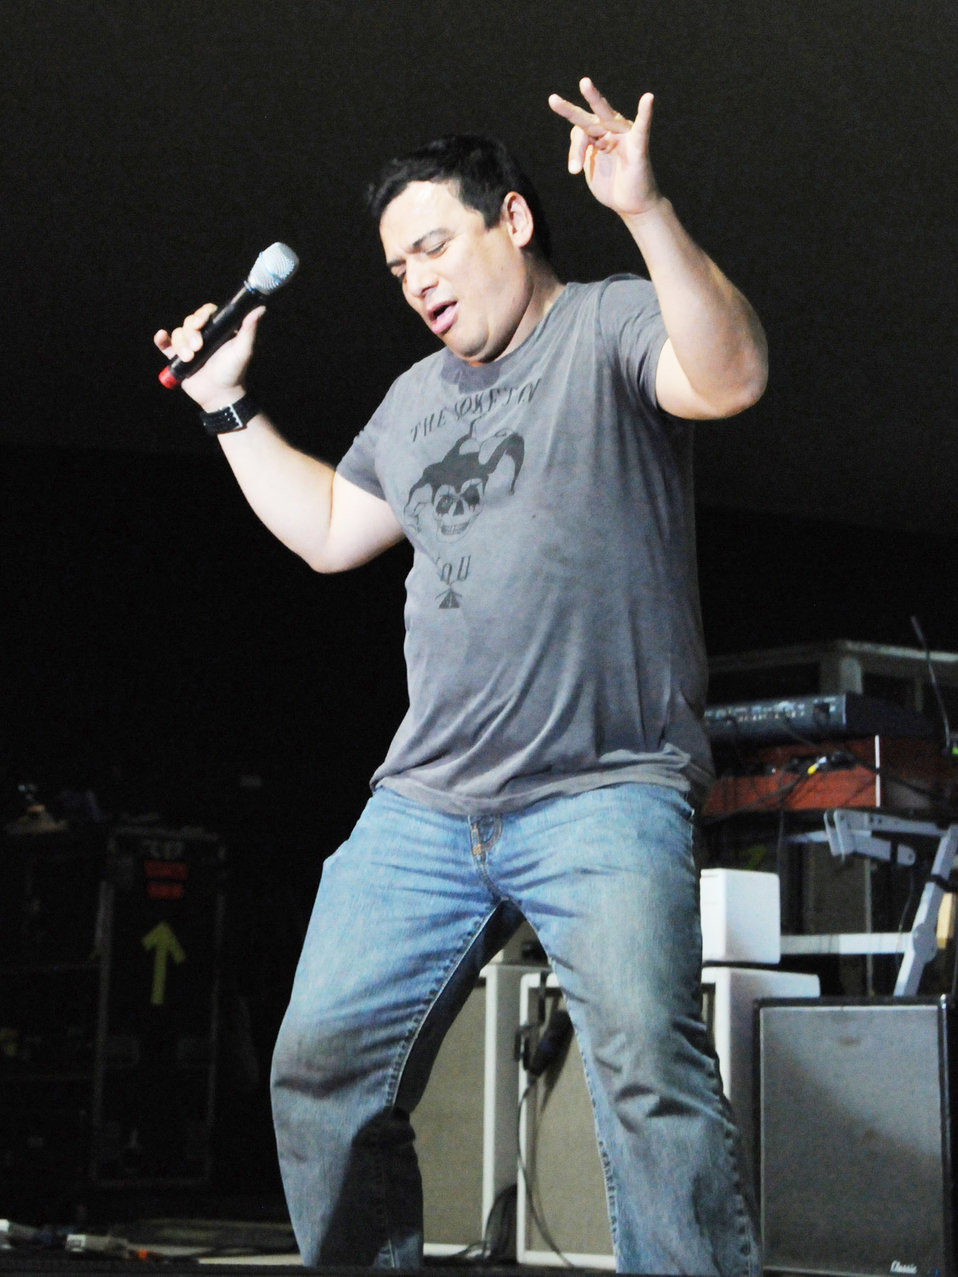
Entertainers put on a show for troops in Southwest Asia

Carlos Mencia performs for a live audience of deployed servicemembers Dec. 6, 2009 at an airbase in Southwest Asia. Tour for Troops 2009 will visit various deployed locations throughout Southwest Asia and Europe and is sponsored by the Air Force Reserve Command.